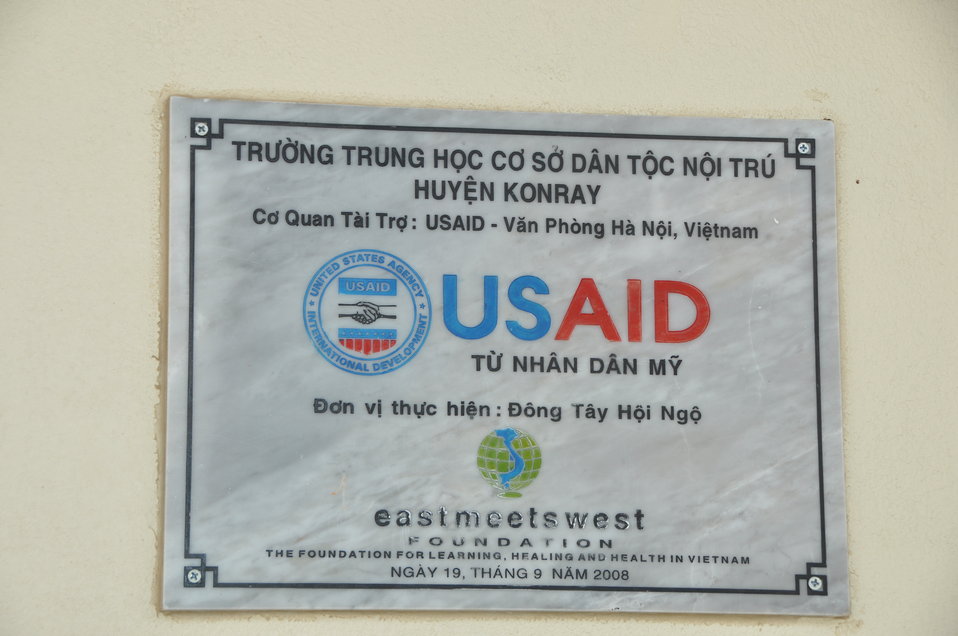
USAID and EMW support preschools in Kon Tum, Vietnam